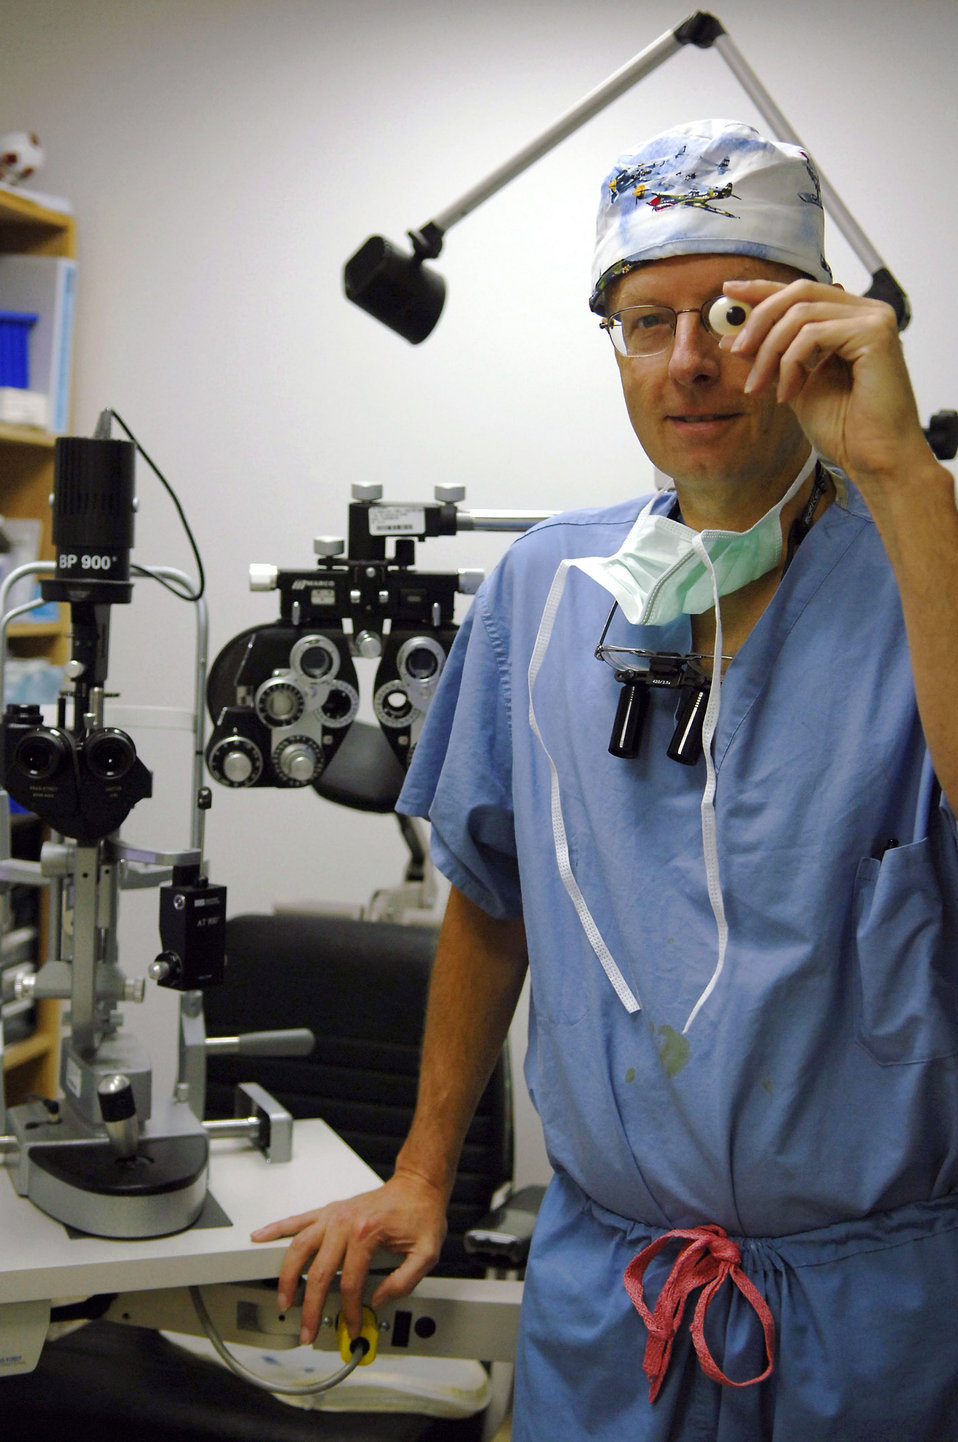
Eye doctors give patients new outlook

Col. (Dr.) Randall Beatty holds an eye prosthesis. Doctor Beatty encounters many eye trauma cases that require his special skills to reconstruct patients' eye sockets and prepare them for prosthetic eyes. Doctor Beatty is a 332nd Expeditionary Medical Operations Squadron ophthalmologist and orbital oculoplastics specialist.